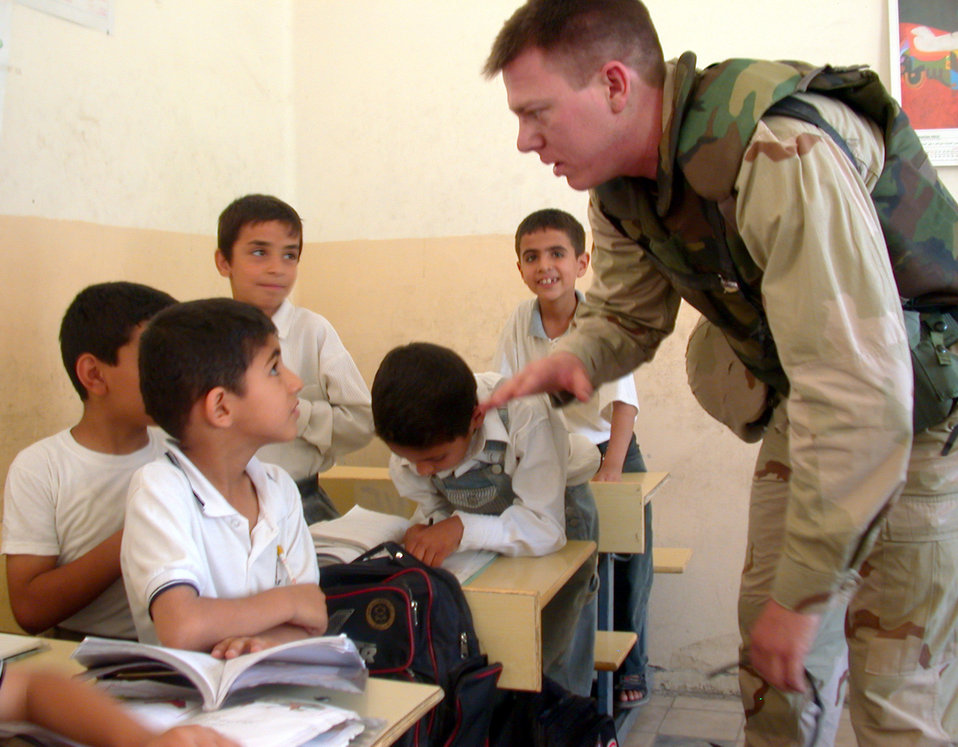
Winning hearts and minds

OPERATION IRAQI FREEDOM -- Second Lt. Brandon Stewart talks with Iraqi students during a recent humanitarian trip to their school in Baghdad. Stewart is assigned to the 380th Air Expeditionary Wing at a forward-deployed location.